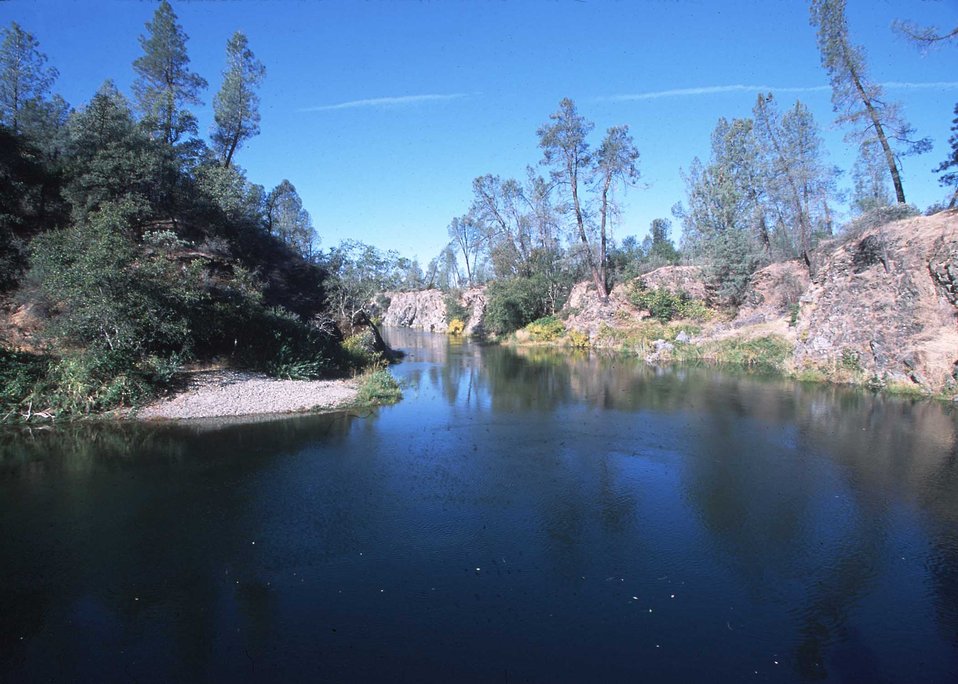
Scenic Clear Creek.